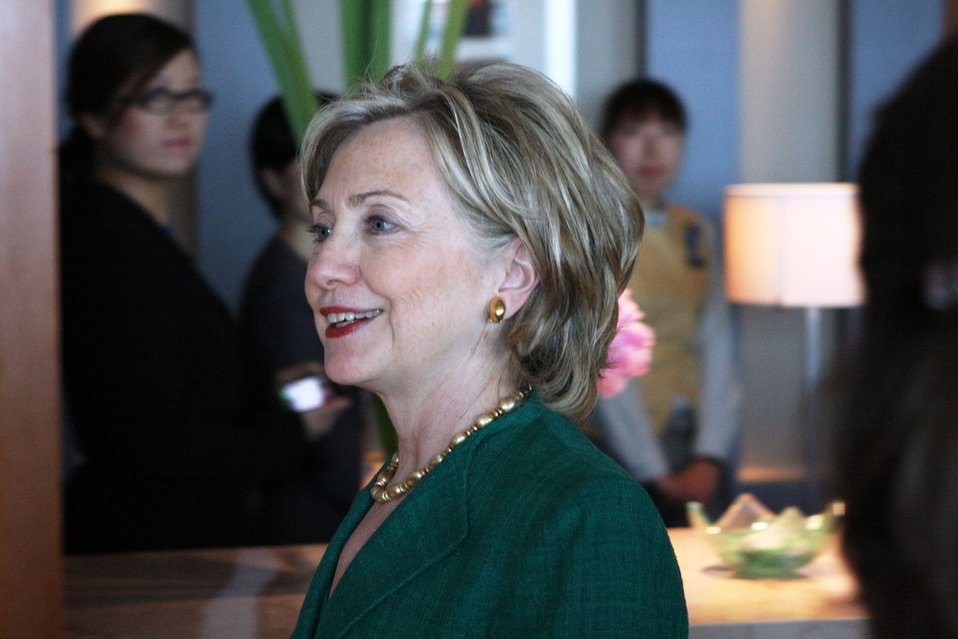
Secretary Clinton Prepares to Deliver Remarks on Cheonan Incident

U.S. Secretary of State Hillary Rodham Clinton prepares to deliver remarks at a press briefing addressing the Cheonan incident in Beijing, China, on May 23, 2010.